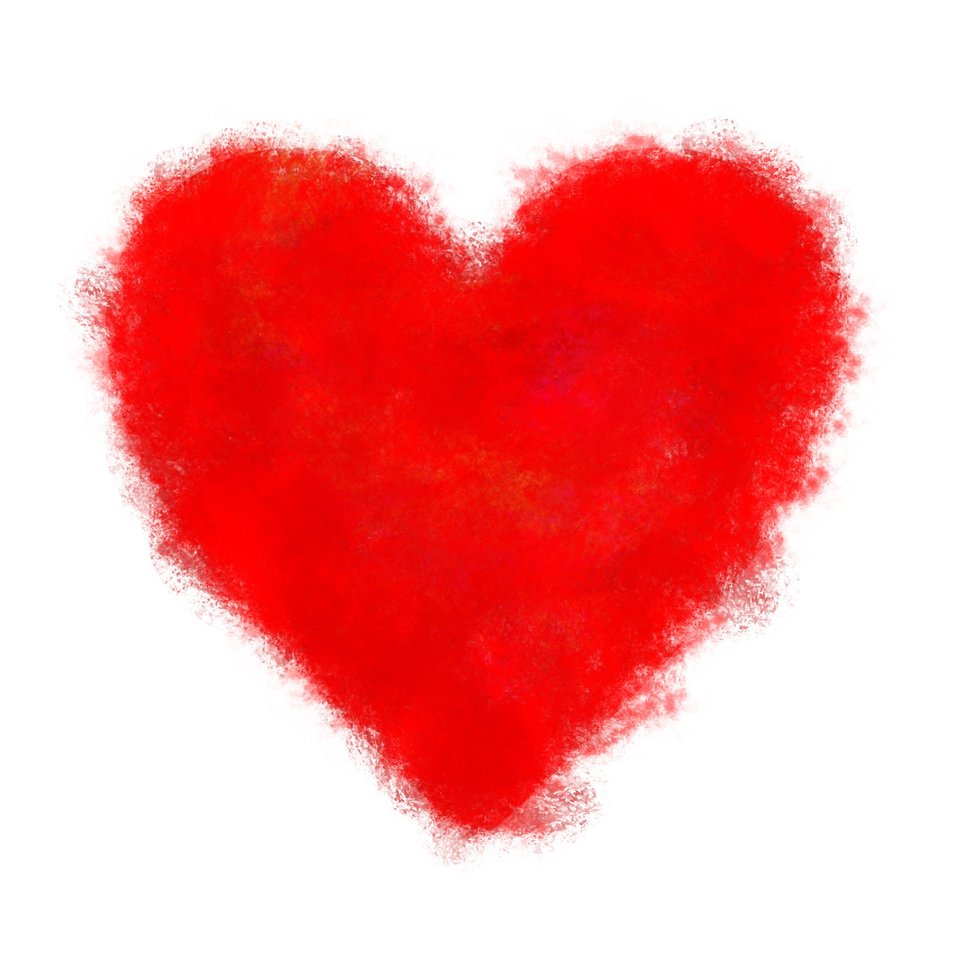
Painted valentine heart

Red hand-painted heart.